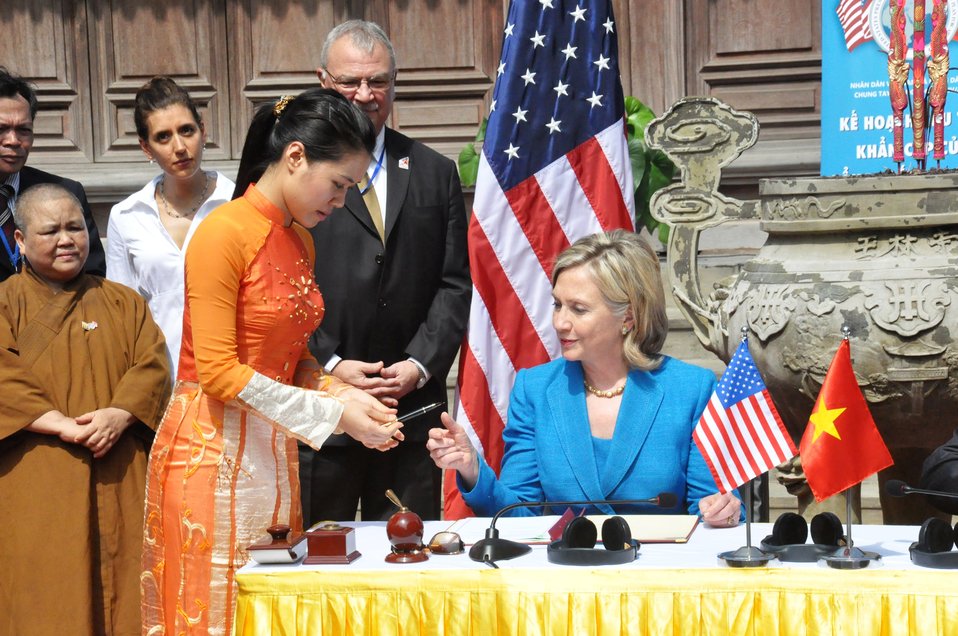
Secretary Clinton Prepares To Sign the U.S.-Vietnam PEPFAR Partnership Framework

U.S. Secretary of State Hillary Rodham Clinton, with U.S. Ambassador to Vietnam Michael W. Michalak, NGO representatives, and religious leaders looking on, prepares to sign the U.S.-Vietnam PEPFAR Partnership Framework with Vietnamese Justice Minister Ha Hung Cuong at Ngoc Lam Pagoda in Hanoi, Vietnam, on July 22, 2010.